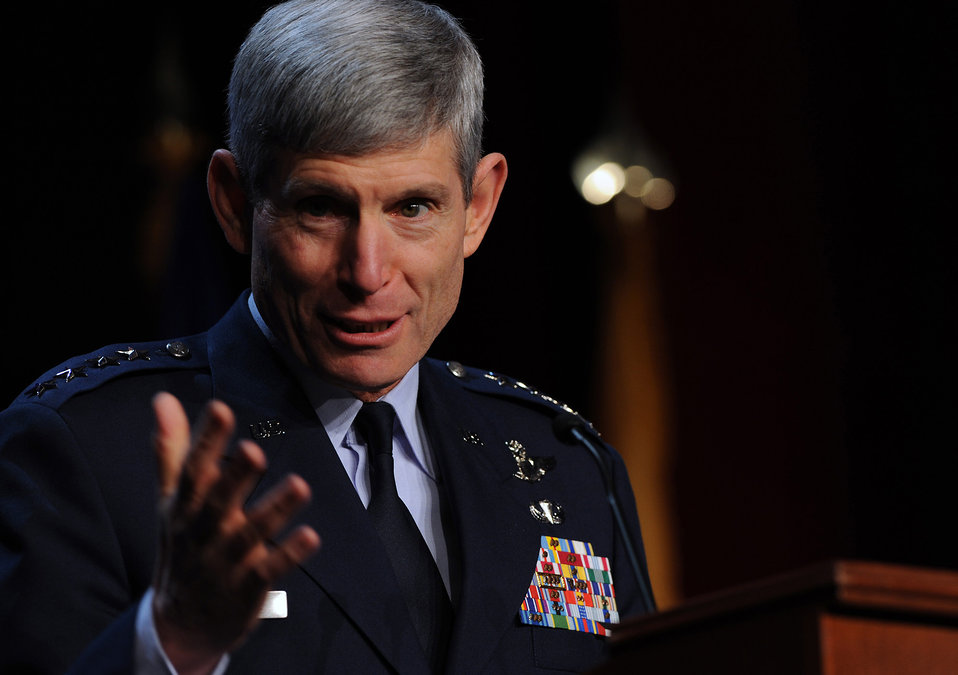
CSAF Speaks at Reserve Officers' Association Symposium

Air Force Chief of Staff Gen. Norton Schwartz speaks at the Reserve Officers Association National Security Symposium Jan. 30, 2011, in Washington, D.C. General Schwartz discussed the importance of total force collaboration during today's intense budgetary pressures.